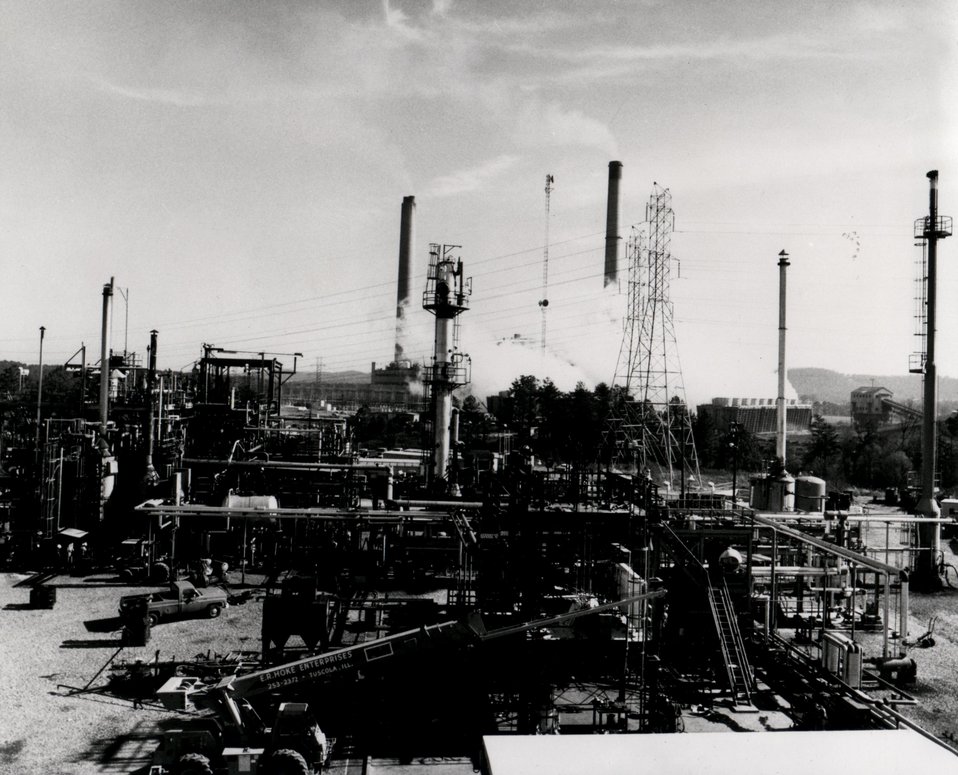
Solid solvent refined coal can be made from a wide range of high-sulphur coals. The SRC-1 plant is located at Wilsonville, Ala. Circa 1980.